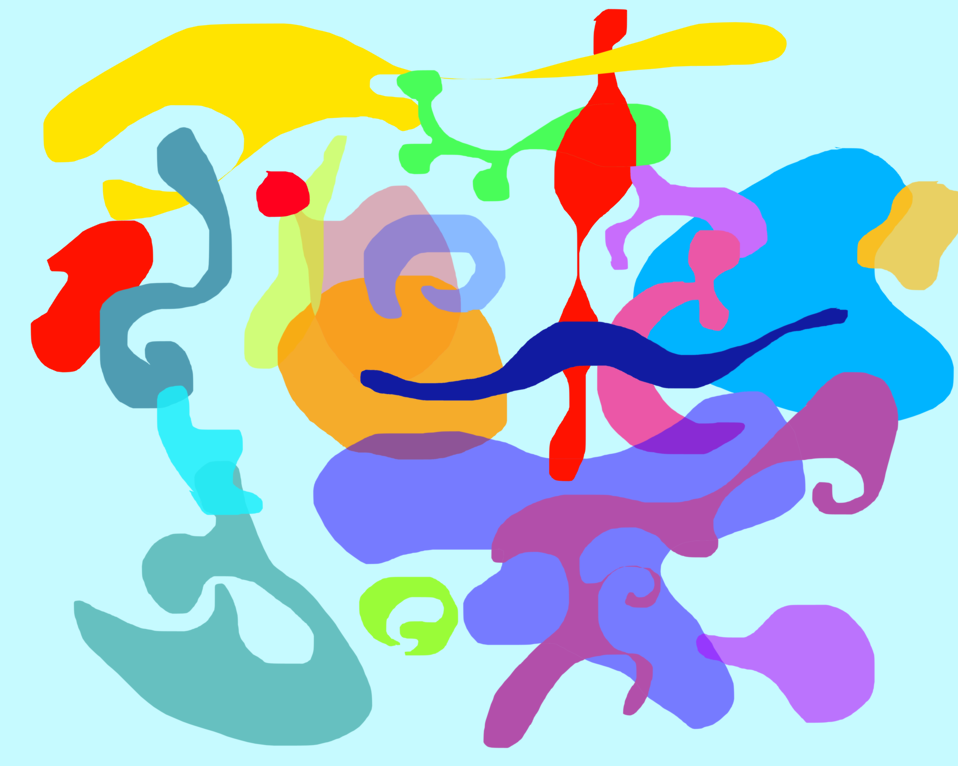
drawing abstract